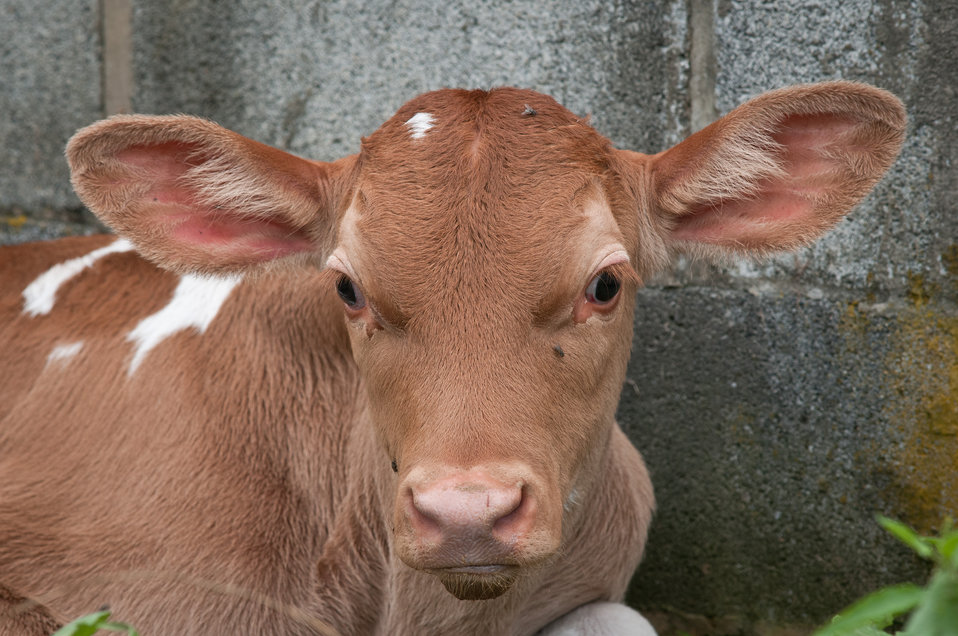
Less than a week old, this Guernsey calf weighs in at more than 170 pounds, and finds morning comfort against a cinderblock wall, on some soft ground, after an evening of summer rain at Nick’s Organic Farm, in Adamstown, MD, on Friday, July 12, 2013. She may grow up to provide nutritious Guernsey milk at the farm. The farm, owned by Nick Maravell, produces Black Angus beef, chicken, turkey, eggs, hay, soybeans, corn, alfalfa, orchard grass, rye; and other crops. The cattle are 100% grass-fed receiving certified organic pasture, certified organic hay (in winter), water and mineral salts mixed with sea kelp. The cattle are not fed hormones, antibiotics or animal products. Poultry feed from grain is ground from organic grain. The poultry also graze on organic pastures. The farm has conducted on-farm research with federal, state and non-profit agencies to refine organic practices. An organization such as the U.S. Department of Agriculture (USDA) Agricultural Research Service (ARS) center in Beltsville has been able to conduct research to improve organic crops and to breed and manage the cattle so that they have.